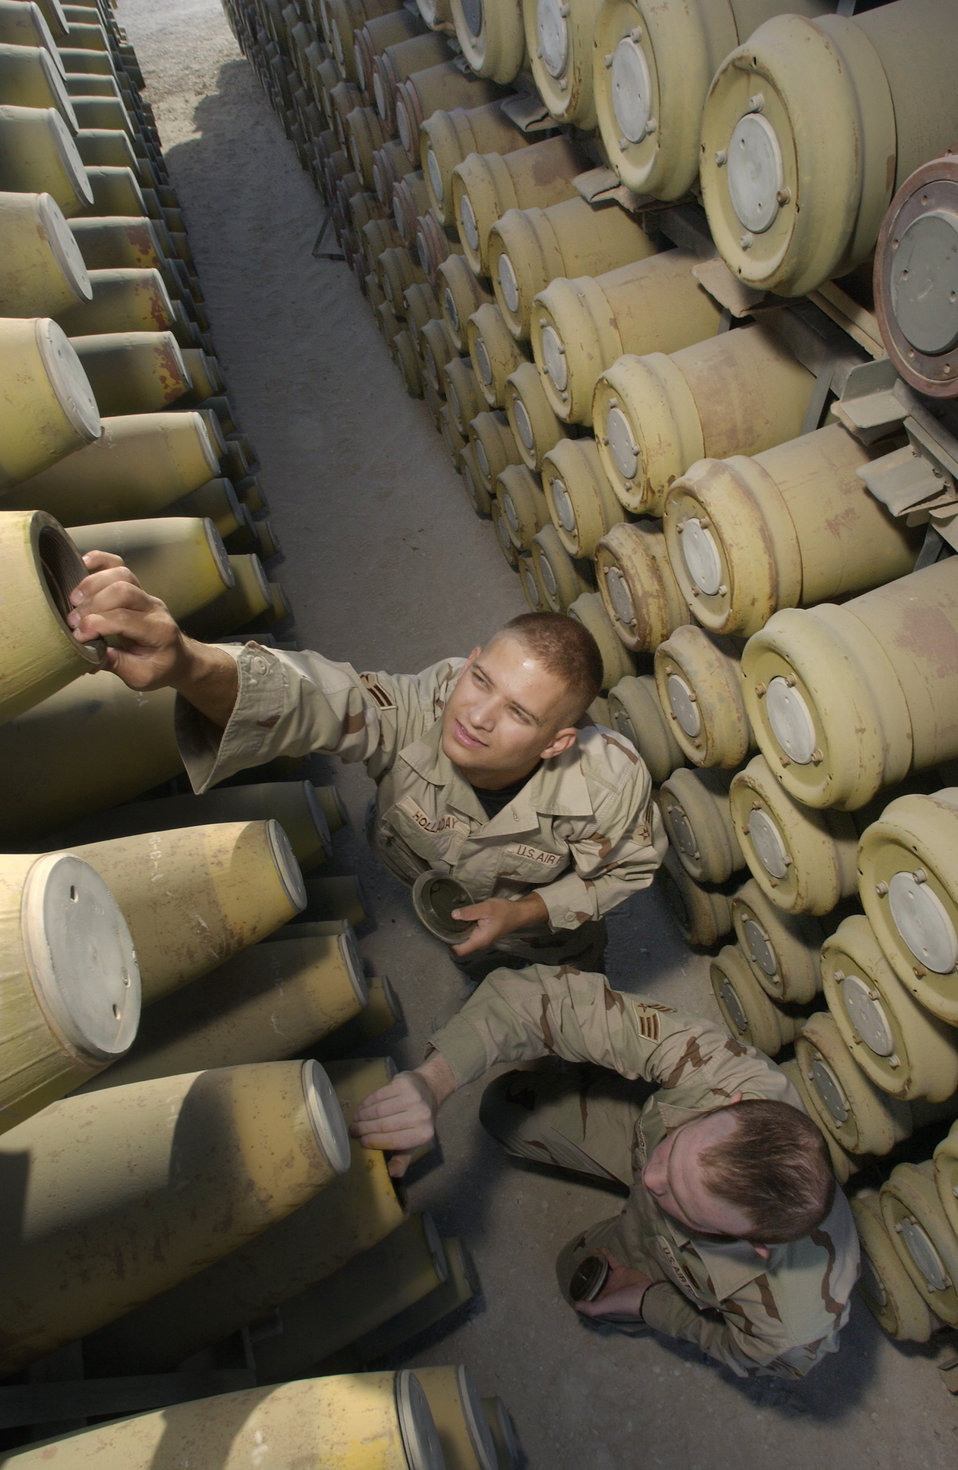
Inspections

SOUTHWEST ASIA -- Airman 1st Class Jessie Holladay (left) and Senior Airman John Bronow inspect a MK-82 500-pound bomb in the munitions-storage area at an undisclosed location. Both airmen are deployed from Royal Air Force Lakenheath, England, and recently volunteered to extend for an additional 30 days.